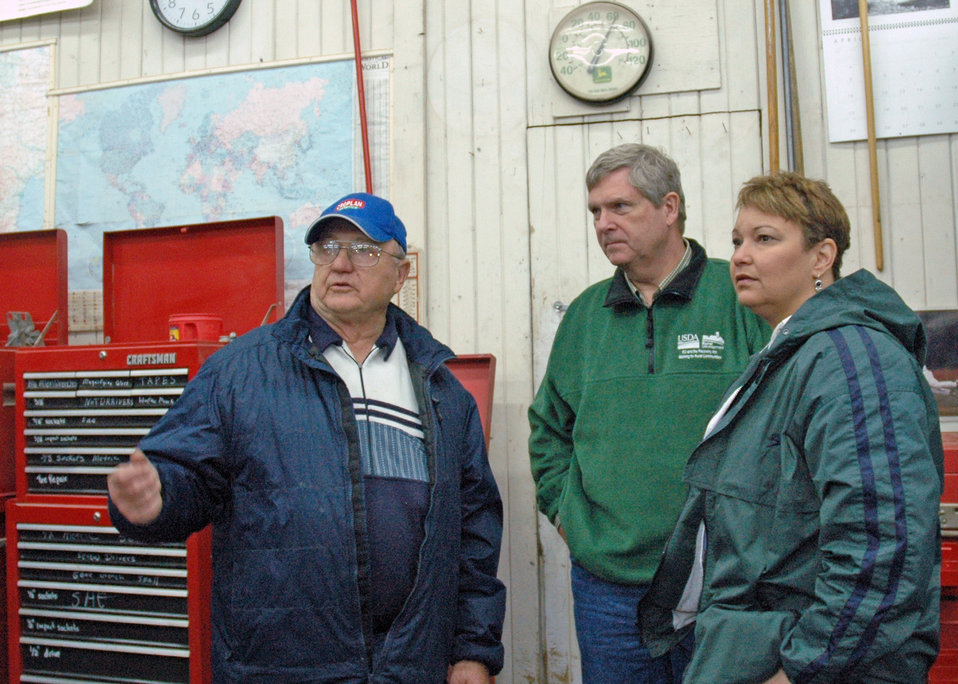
Mike Gannon (left) talking with Agriulture Secretary Tom Vilsack (center) and Enviormnetal Protection Agency Administator Lisa P. Jackson (right), during a steakholder meeting held in the Wassenaar’s machine shed on their farm in IA, on Tuesday, April 19, 2011.